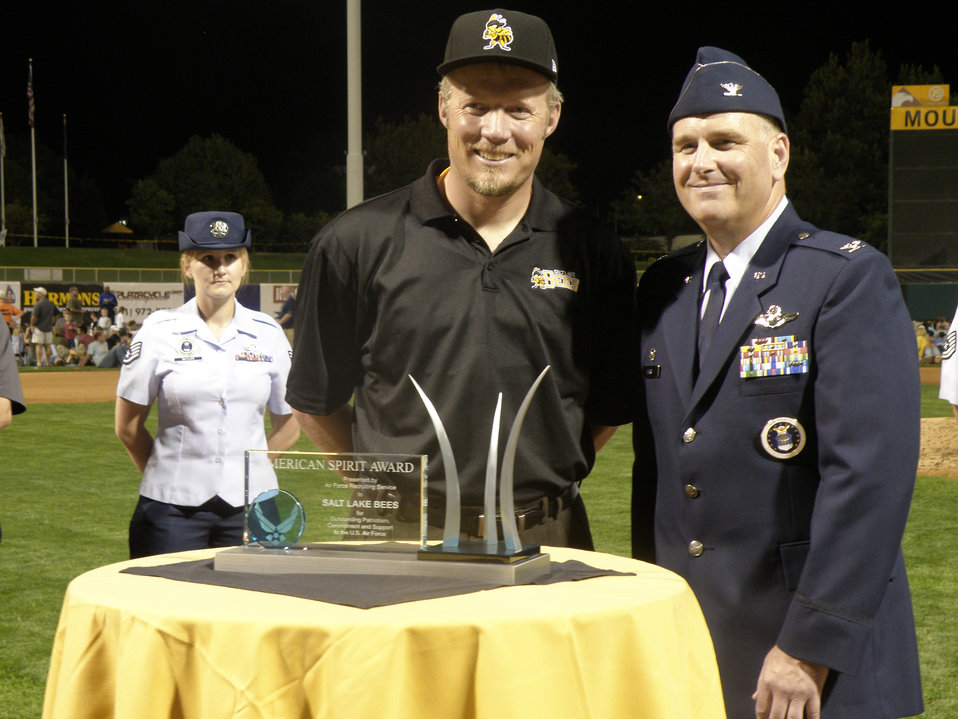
Baseball team wins 'American Spirit' Award

Col. Mark Ward, 372nd Recruiting Group commander, presents the American Spirit Award to Greg Miller Aug. 22 at the Salt Lake Bees baseball game at Spring Mobile Park in Salt Lake City, Utah, Aug. The Bees were awarded the Air Force Recruiting Service's top civic award for their unwavering support of the Air Force. Mr. Miller is chief executive officer for Larry H. Miller Group of Companies that owns the Salt Lake Bees.